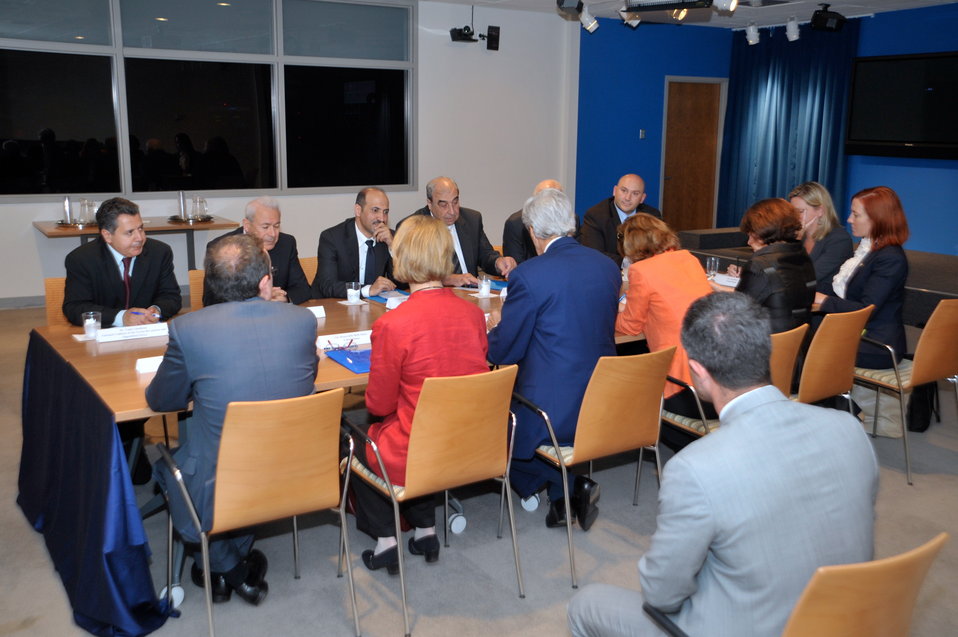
Secretary Kerry Meets With Members of the Syrian Opposition Council

U.S. Secretary of State John Kerry meets with members of the Syrian Opposition Council after visiting the United Nations in New York City on July 25, 2013.